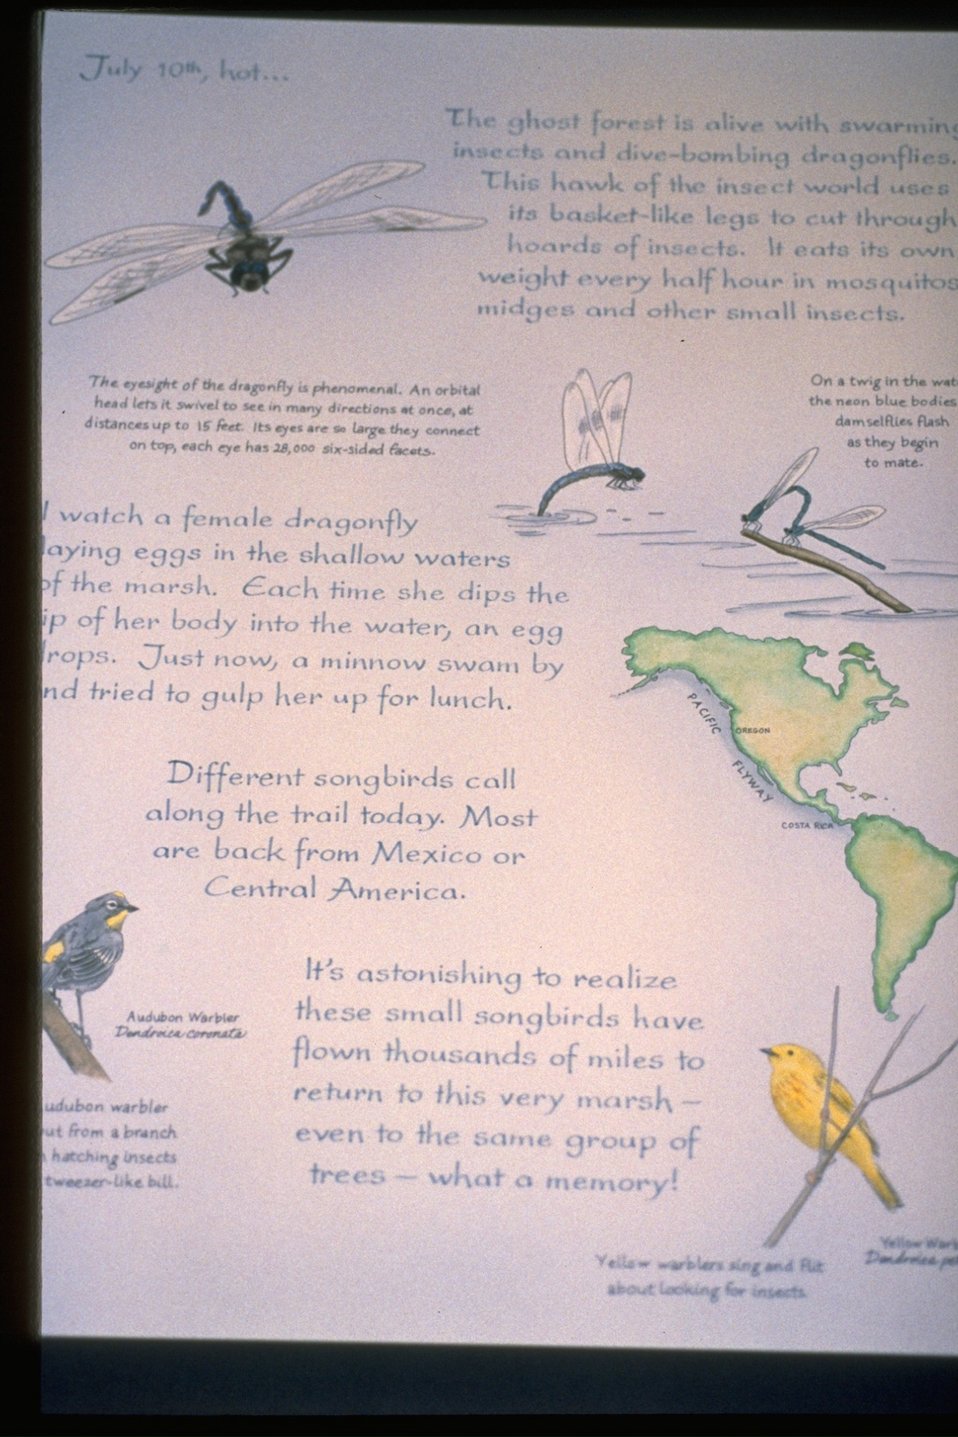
Interpretive Panels: Boardwalk Trail Journals.